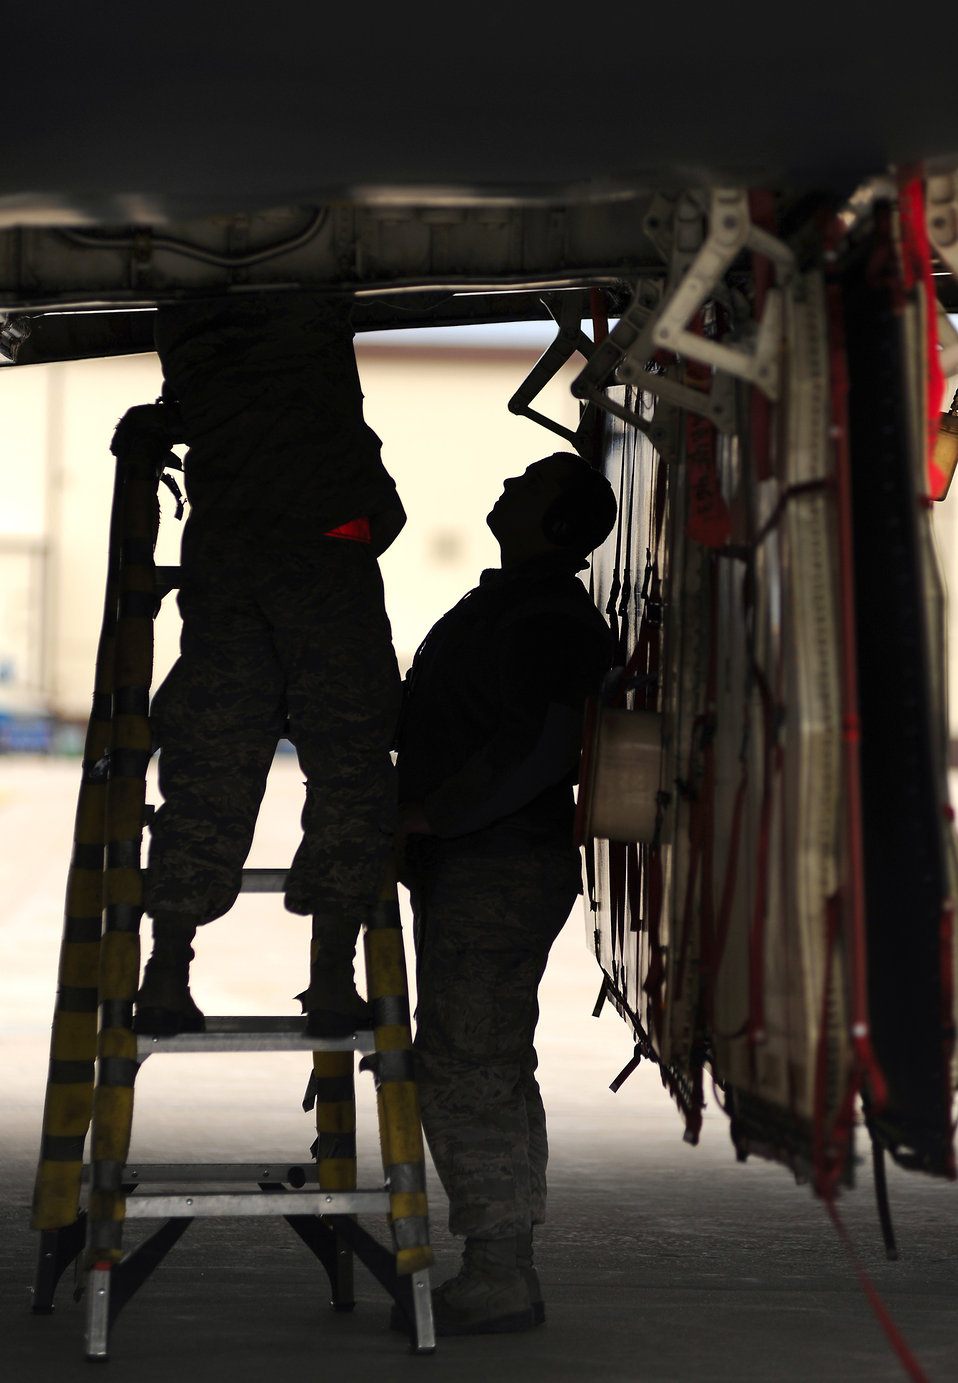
Operation Odyssey Dawn

WHITEMAN AIR FORCE BASE Mo. 509th Aircraft Maintenance Squadron, maintainers and crew chiefs, prepare B-2 Stealth Bombers for Operation Odyssey Dawn March 19, 2011.